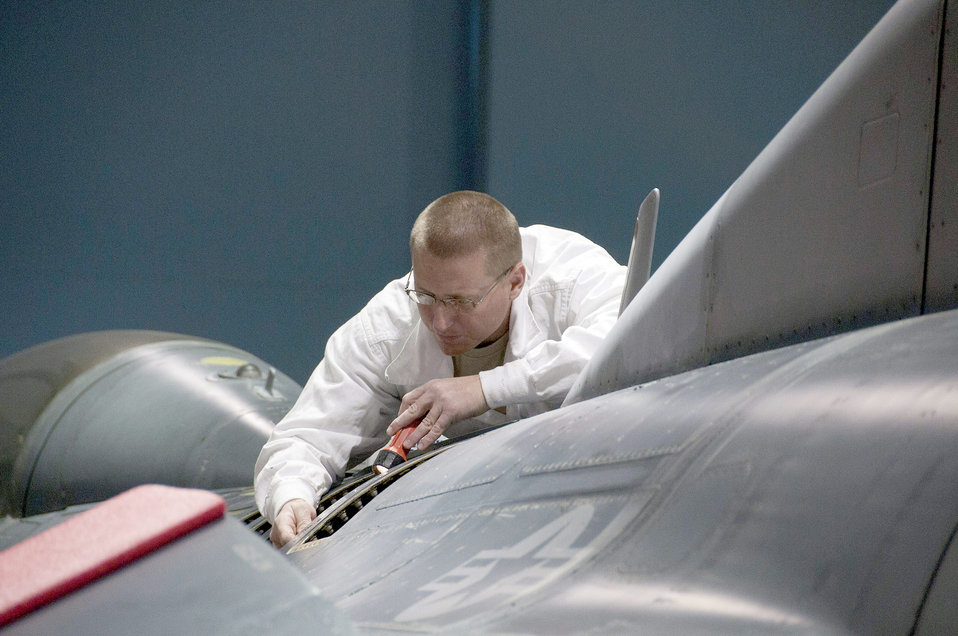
Human factors

Staff Sgt. Ramey Hubbard completes an inspection after making fuel leak repairs on an F-16 Fighting Falcon March 5, 2011, at the 162nd Fighter Wing in Tucson, Ariz. Aircraft maintainers like Hubbard are embracing Maintenance Resource Management at an increasing rate to reduce the human factor in preventable mishaps.